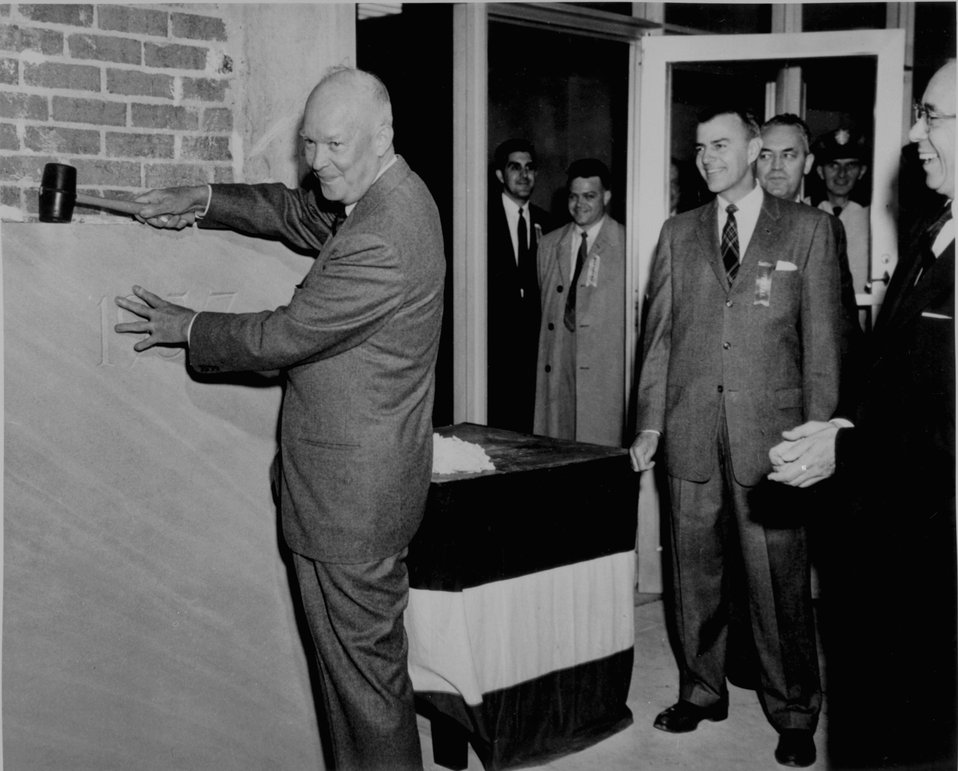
GTN dedication -- Eisenhower Laying Cornerstone. c. 1957